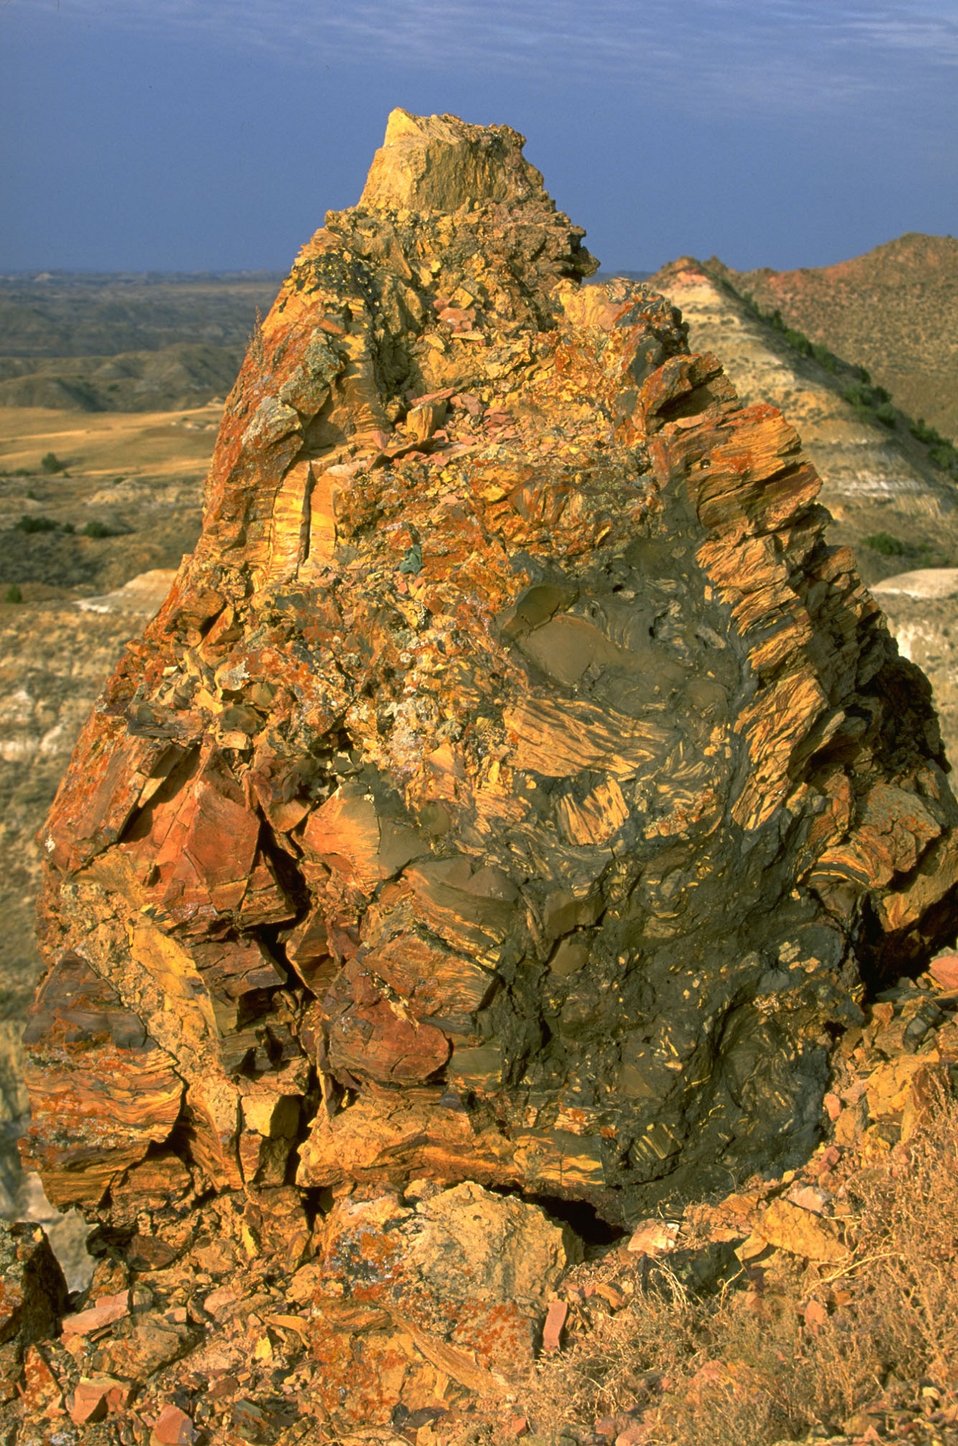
Golden pillar in the Terry Badlands